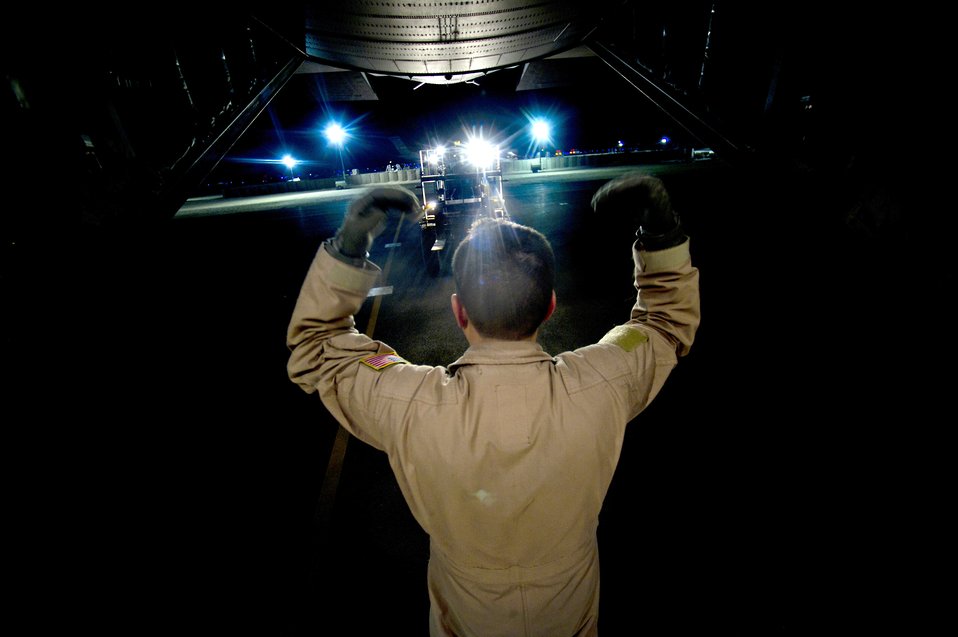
Keep on coming

Master Sgt. Niles Dupont guides a forklift onto a C-130 Hercules March 3, 2011, during a mission in support of Operation New Dawn in Iraq. Sergeant Dupont is a loadmaster assigned to the 746th Expeditionary Airlift Squadron.